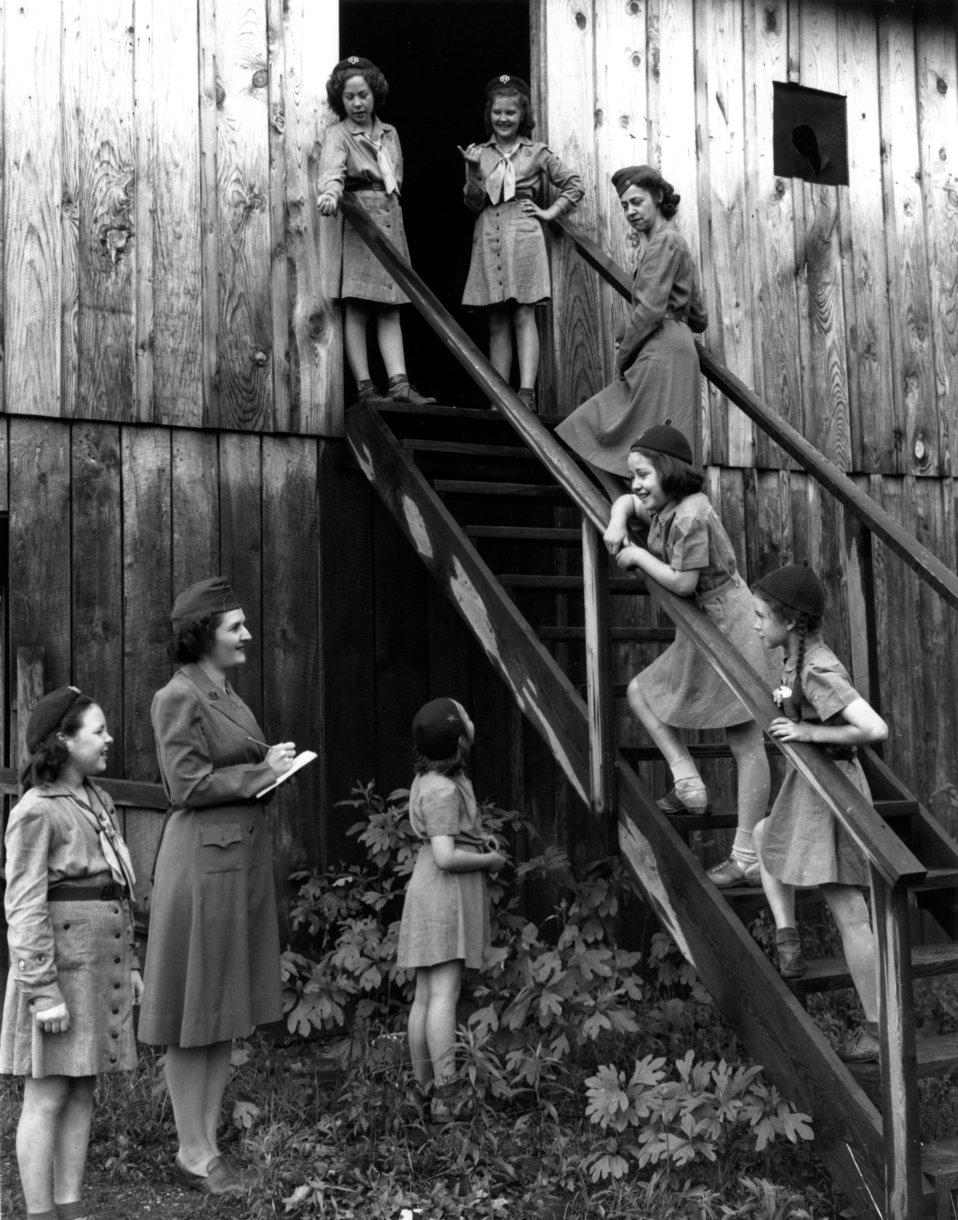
Recreation at Oak Ridge